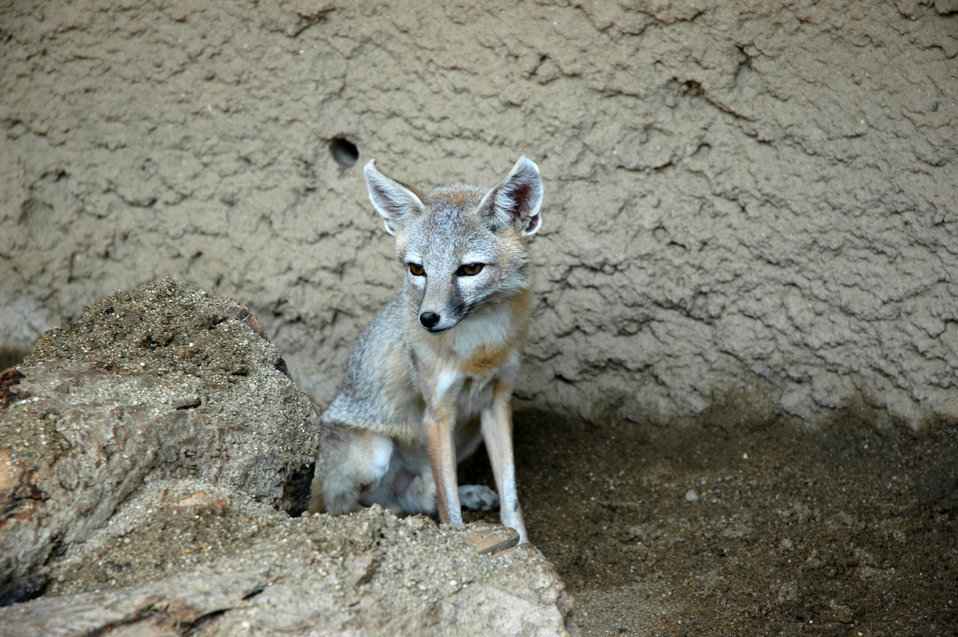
Kit Fox

The Kit Fox is a species protected by the Santa Clara Valley Habitat Conservation Plan.